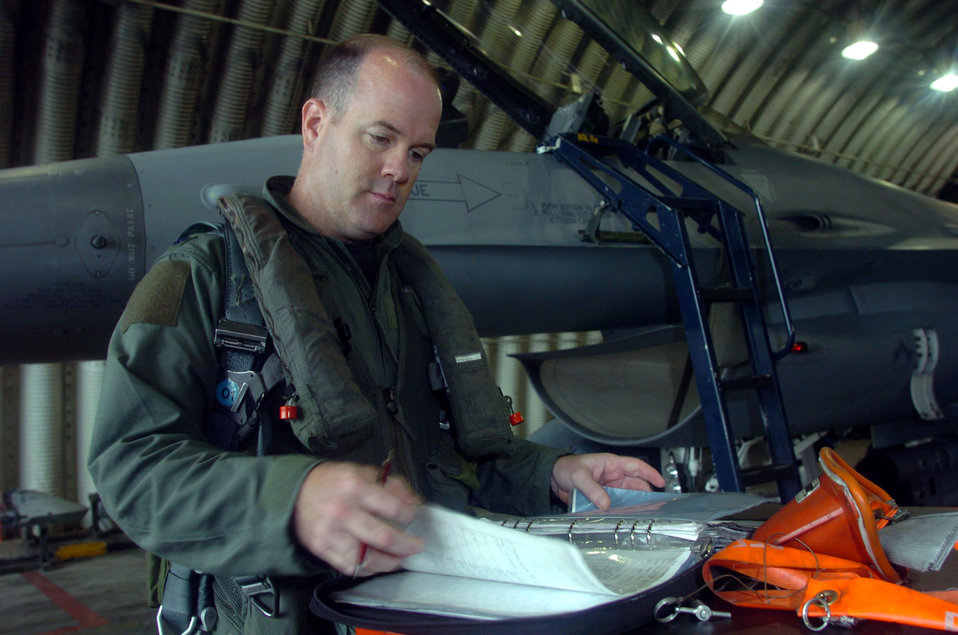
Kunsan provides strong foundation for F-16 pilots

KUNSAN AIR BASE, South Korea -- Lt. Col. Pat Miller looks at a preflight checklist before a mission here. He is an F-16 Fighting Falcon pilot and the 35th Fighter Squadron commander.